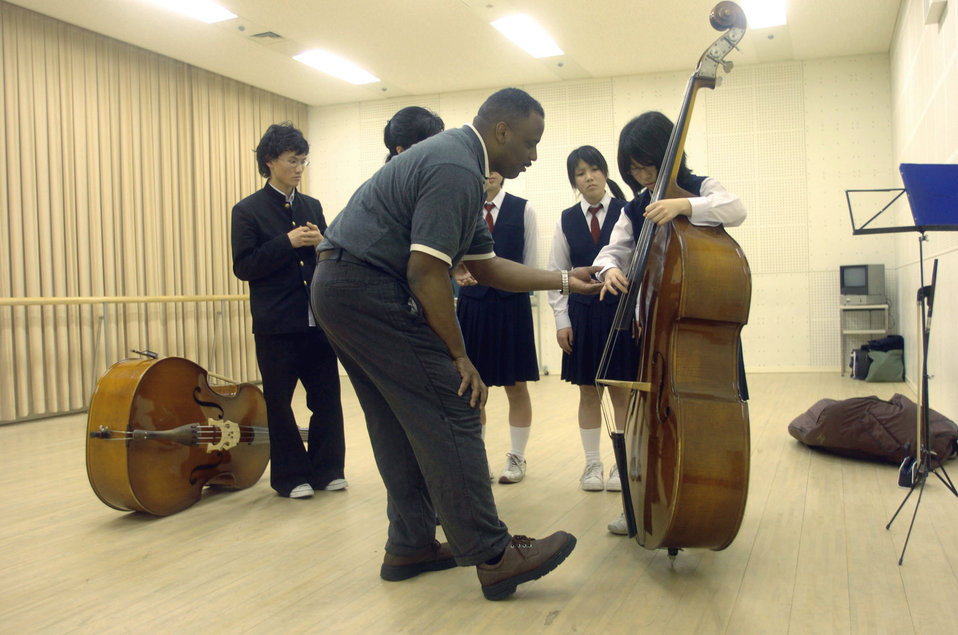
Music lessons

MATSUYAMA, Japan -- Staff Sgt. Terry Grace shows Japanese high-school students proper fingering techniques on an acoustic bass instrument during a music clinic here April 15. Sergeant Grace is a bass player with the U.S. Air Force Band of the Pacific-Asia at Yokota Air Base, Japan.